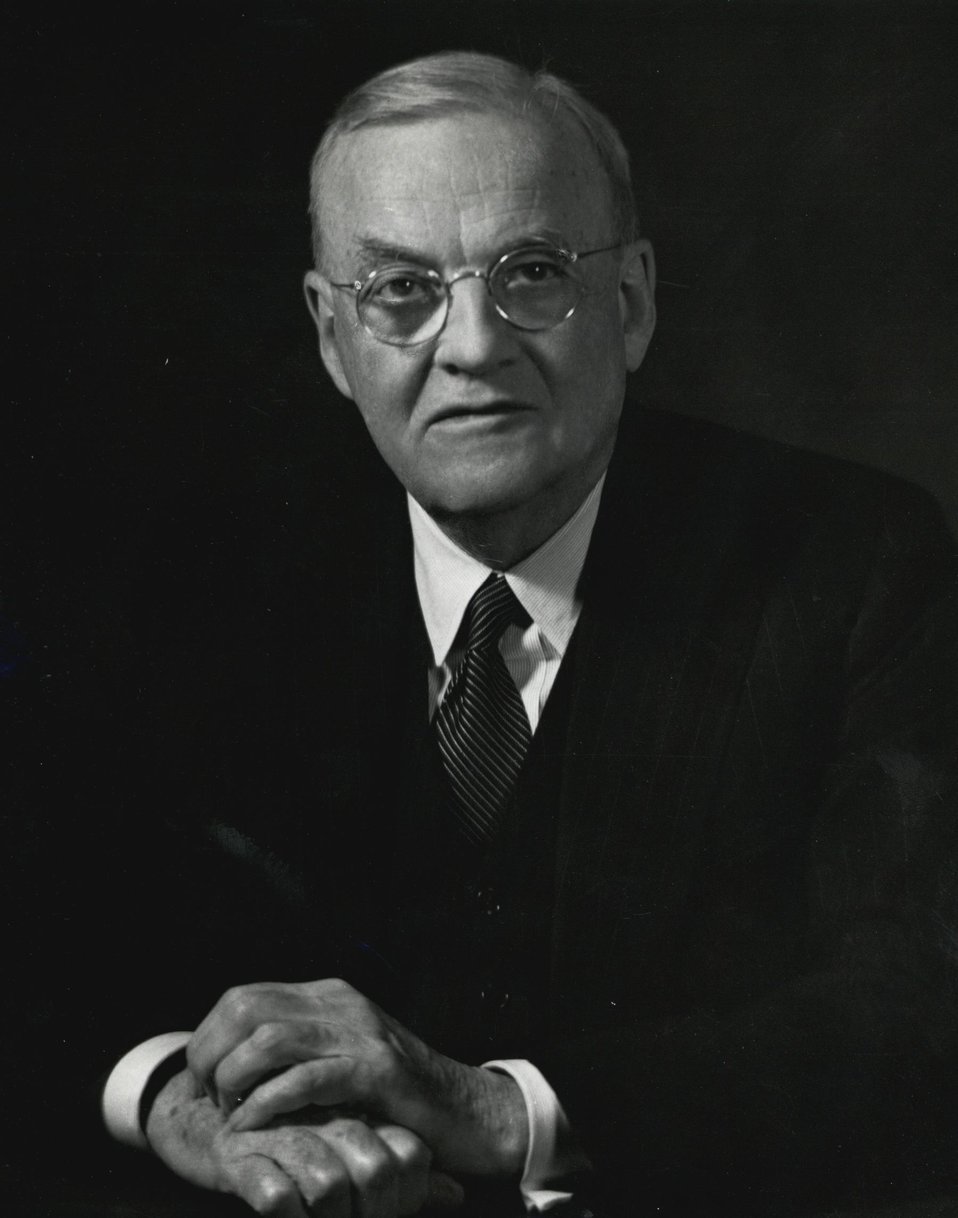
John Foster Dulles, U.S. Secretary of State, January 21, 1953 to April 22, 1959